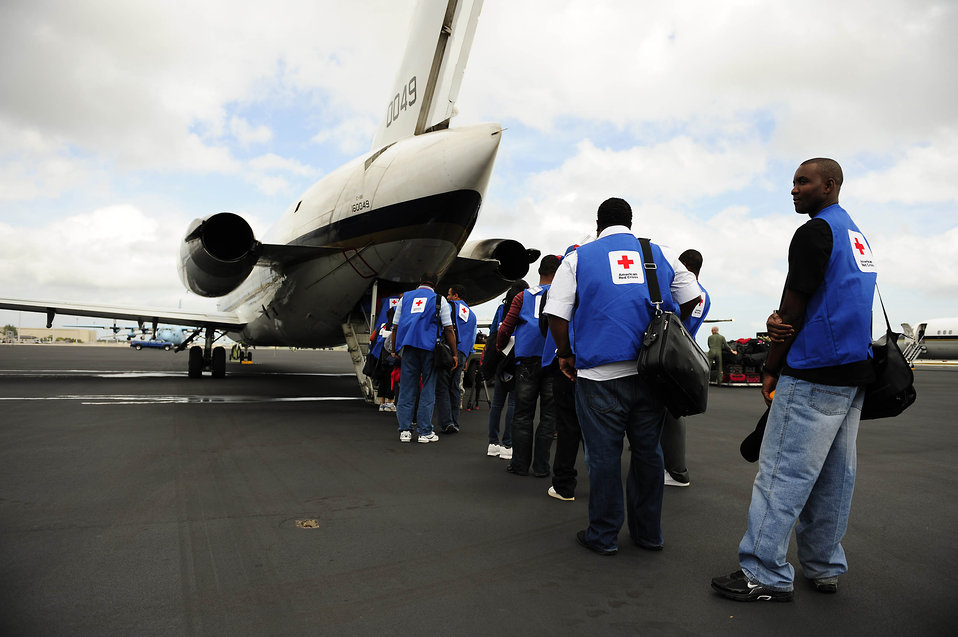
Operation Unified Response

American Red Cross volunteers board a U.S. Navy C-9 at Homestead Air Reserve Base, Fla., bound for Haiti Jan. 21, 2010. These volunteers are translators who will help U.S. servicemembers communicate with earthquake survivors receiving medical attention.